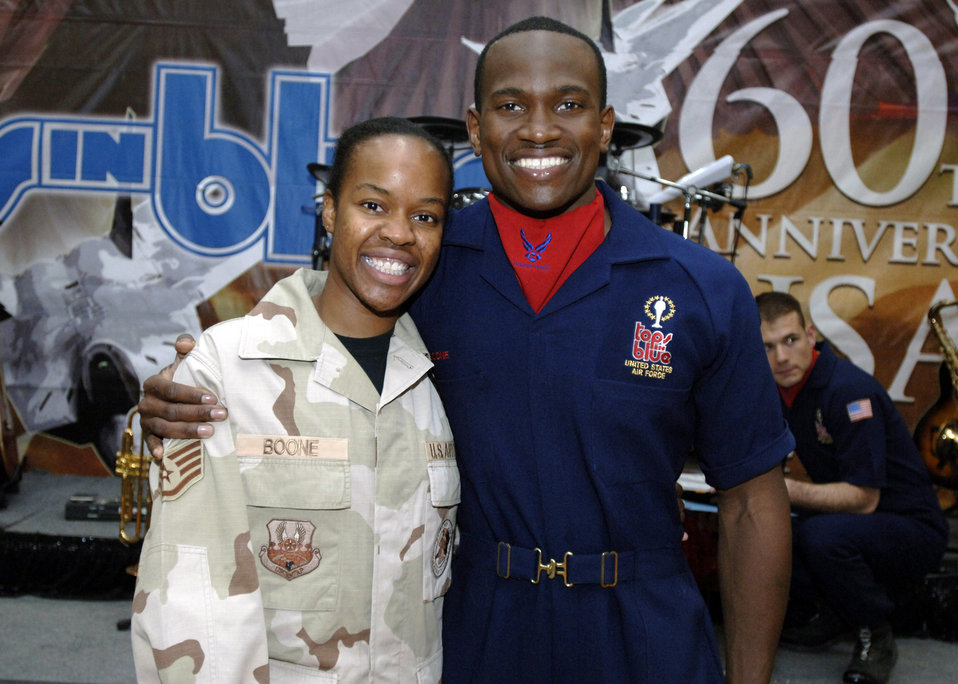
Tops in Blue boosts servicemembers' morale through song

Deployed Staff Sgt. Kara Boone gets a hug from her brother Staff Sgt. Wendell Boone a member of the all active-duty Air Force special unit,Tops in Blue, who are touring Southwest Asia. Tops in Blue entertained the 386th Air Expeditionary Wing May 2 at an undisclosed location. The group's main mission is to perform for military personnel and their families throughout the world.